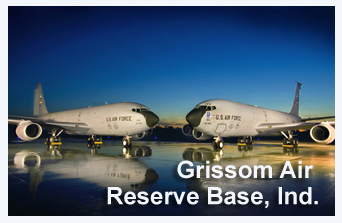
Grissom Air Reserve Base, Ind.

On May 12, 1968, Bunker Hill Air Force Base was renamed for Col. Virgil